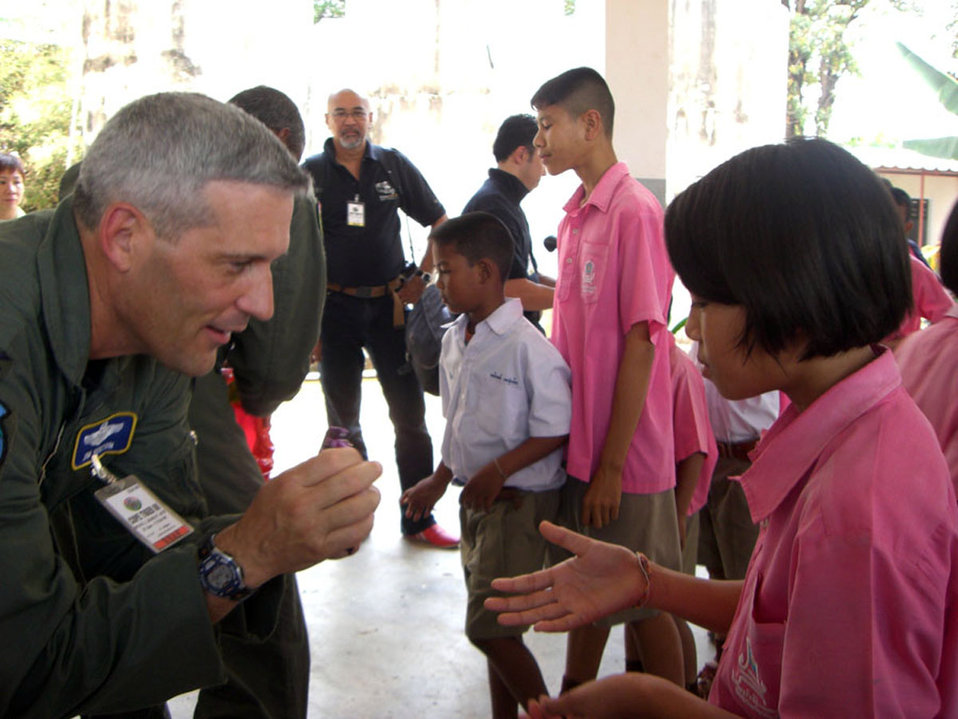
PACAF team donates to Thai school

Col. James Horton gives candy to a Thai student Jan. 30 at Ban Don Phawa School in a rural village outside of Korat, Thailand. Colonel Horton, the 13th Air Expeditionary Wing commander for Exercise Cope Tiger 2008, presented a donation of school equipment to the school on behalf of Pacific Air Forces and a PACAF medical team provided free medical and dental care to local residents at the school.